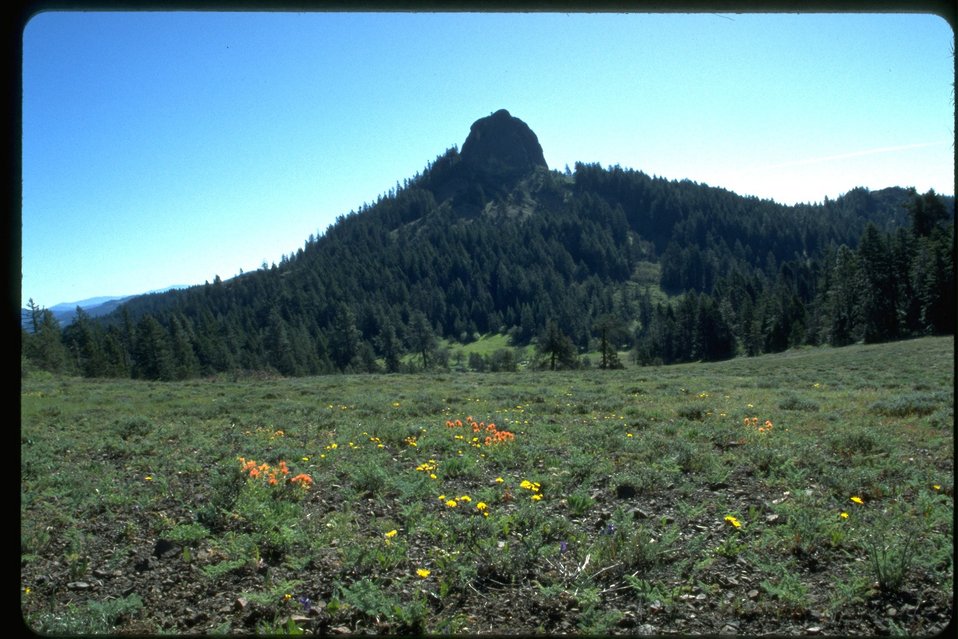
Long Shot of Pilot Rock with wild flowers in foreground, Cascade-Siskiyou National Monument (CSNM).